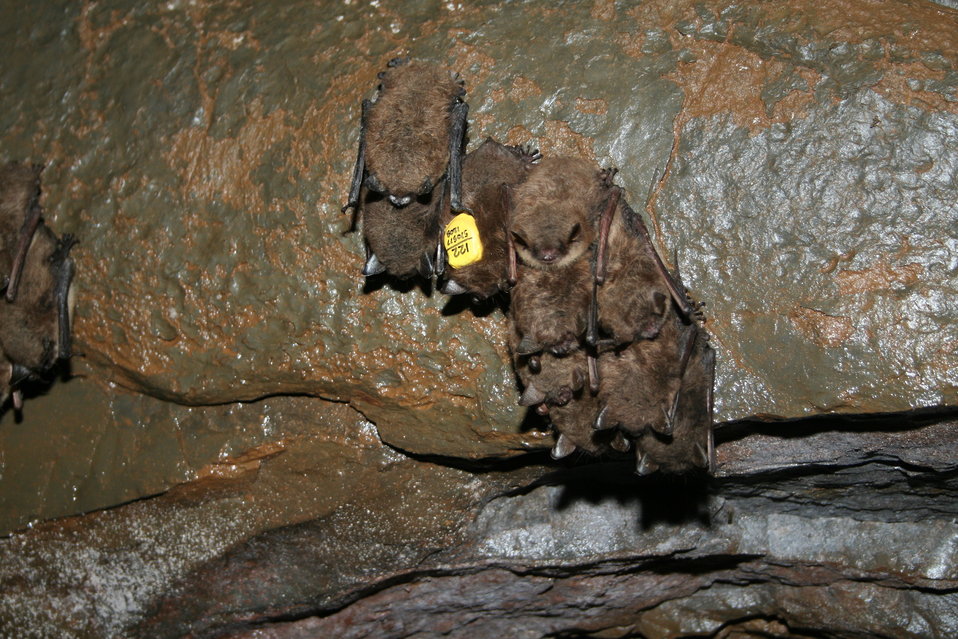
One bat with attached datalogger hibernating in a cluster, Shindle Iron Mine, Pennsylvania

Credit: Greg Turner, Pennsylvania Game Commission

Image size: 3456xp (48 in.) W x 2304p (32 in.) H, 72 ppi, 4.2 MB